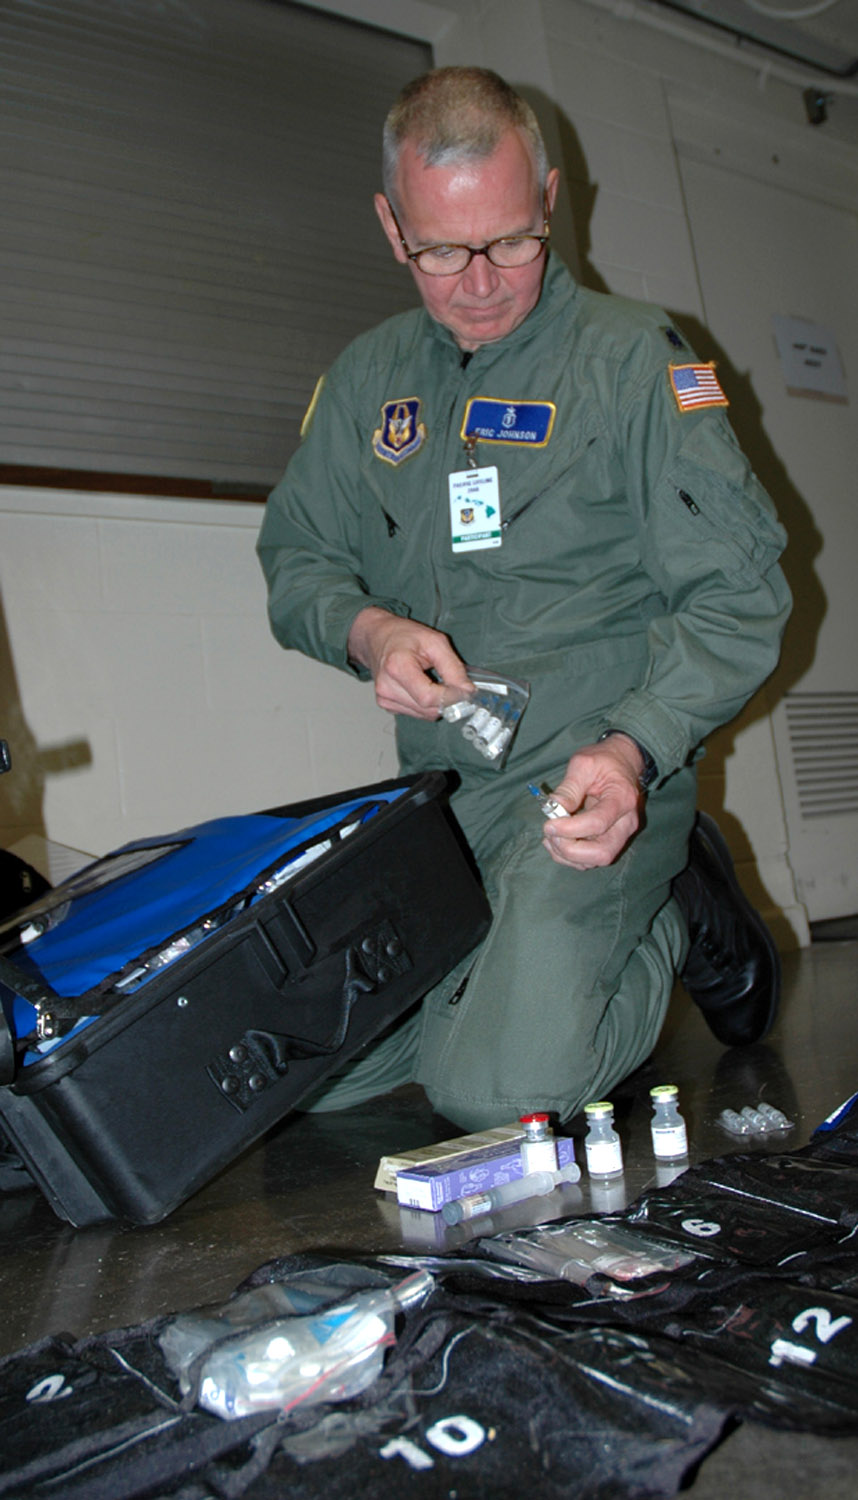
CATT

Lt. Col. Eric Johnson inventories the drug kit to make sure the Critical Care Air Transport Team has every medicine they will need during flights for the Pacific Lifeline exercise. Pacific Lifeline is a humanitarian assistance disaster response exercise taking place over three Hawaiian Islands Jan. 26 to Feb. 9. More than 900 Department of Defense personnel are participating. Colonel Johnson is an anesthesiologist for the 446th Aeromedical Staging Squadron.